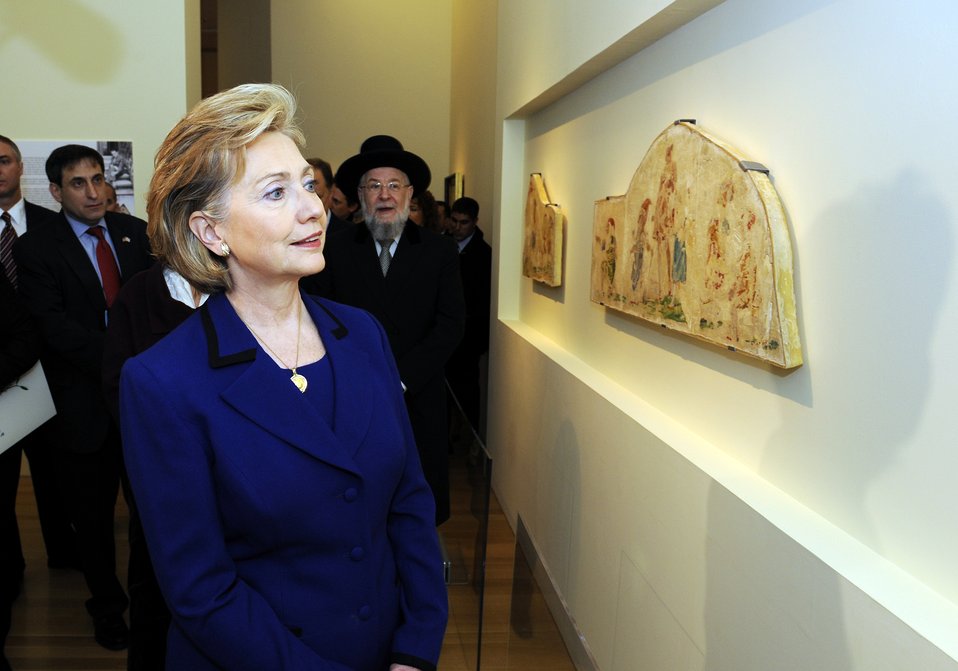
Secretary Clinton Visits Holocaust Art Museum

U.S. Secretary of State Hillary Clinton visited the new Bruno Schulz display, Wall Painting under Coercion, in the Holocaust Art Museum, guided by Director of the Museums Division Yehudit Inbar and Senior Art Curator Yehudit Shendar and accompanied by Chief Rabbi Lau, Yad Vashem Council Chairman, and Middle East Special Envoy Senator George Mitchell in Jerusalem March 3, 2009